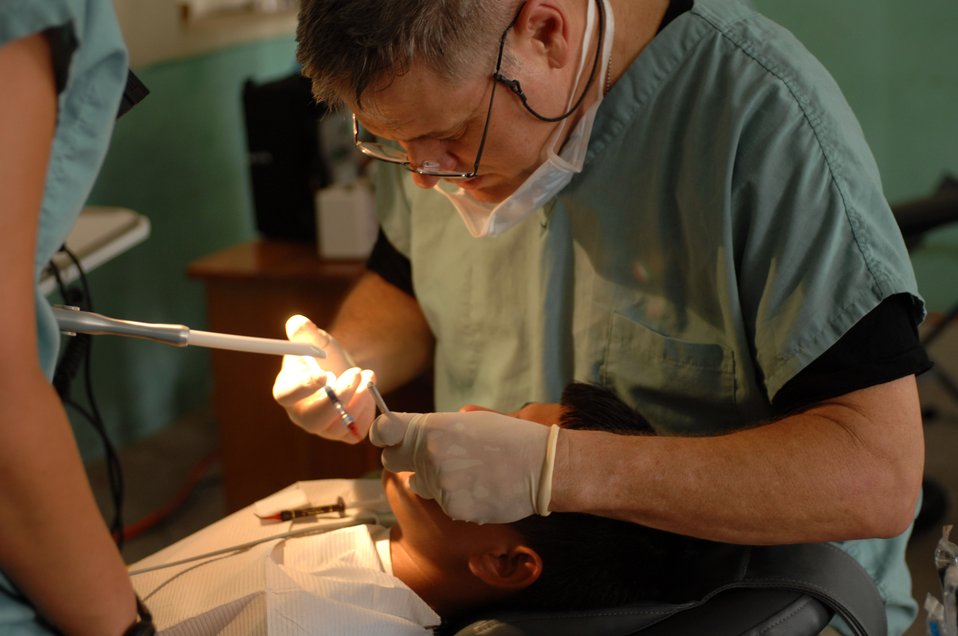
Air Force medics provide care aboard Navy hospital ship

Lt. Col. (Dr.) Richard Tate provides dental care for a patient as Staff Sgt. Monica Christman helps Aug. 1 at the San Pablo Roman Catholic School in San Pablo, Belize. The U.S. Military Sealift Command hospital ship USNS Comfort is on a four-month humanitarian deployment to Latin America and the Caribbean providing medical treatment to approximately 85,000 patients in a dozen countries. While deployed, USNS Comfort is under operational control of U.S. Naval Forces Southern Command and tactical control of Destroyer Squadron 24. Colonel Tate is a deployed Air Force dentist and Sergeant Christman is a dental assistant.